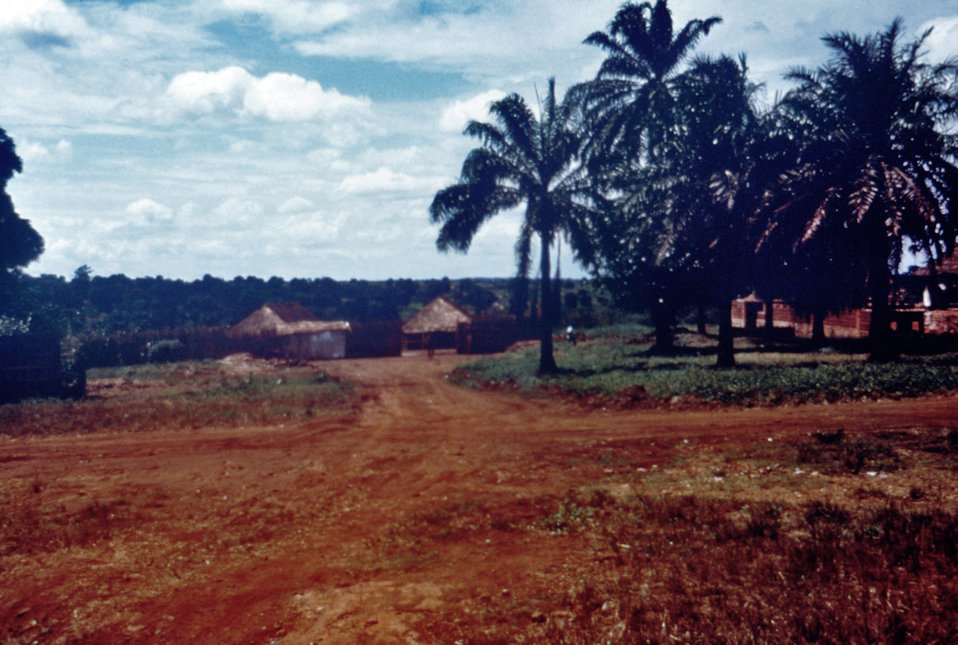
In the background of this photograph of a Maridi, Sudan dirt-road intersection, one will notice a number of thatched dwellings representing the Maridi Hospital, which was located in one of the areas in Sudan that was devastated by that region's 1976 Ebola virus outbreak.